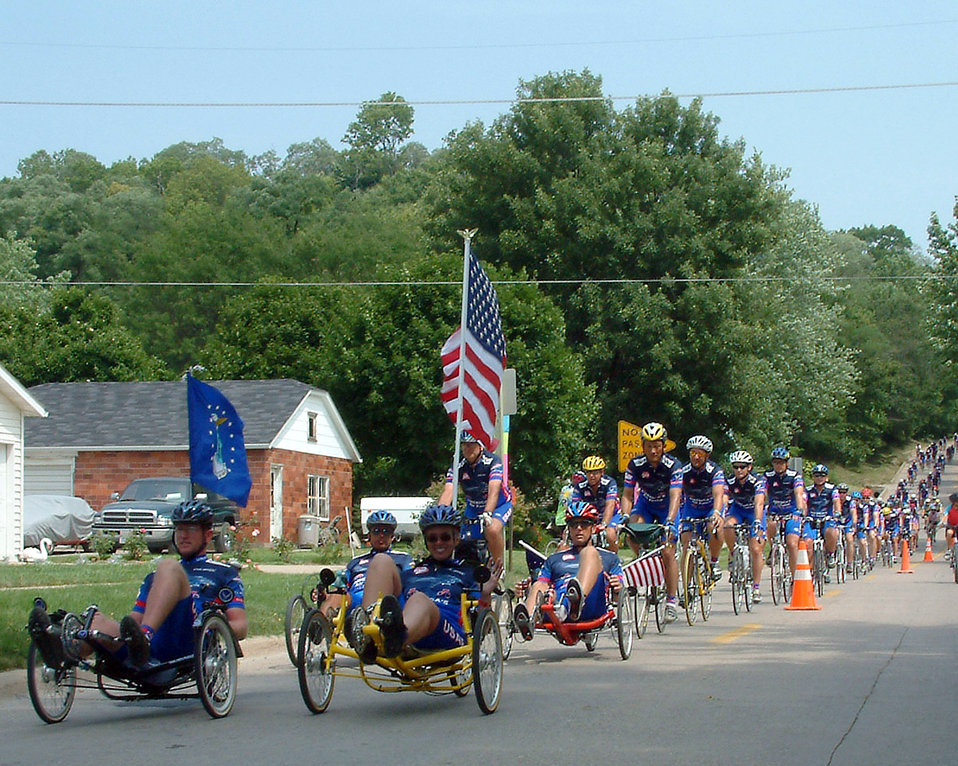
Biking across Iowa

FORT MADISON, Iowa -- Staff Sgt. Brad Whitmill and Dr. Carol Belt lead the Team Air Force cyclists here July 26. The destination marked the end of the seven-day, 450-mile Des Moines Register's Annual Great Bike Ride Across Iowa. The American flag on Belt's bike had been recently flown over Baghdad, Iraq, and Bagram Air Base, Afghanistan. It was carried to honor American forces serving in operations Enduring Freedom and Iraqi Freedom. Whitmill is stationed at Offut Air Force Base, Neb., and Belt is from Scott AFB, Ill.